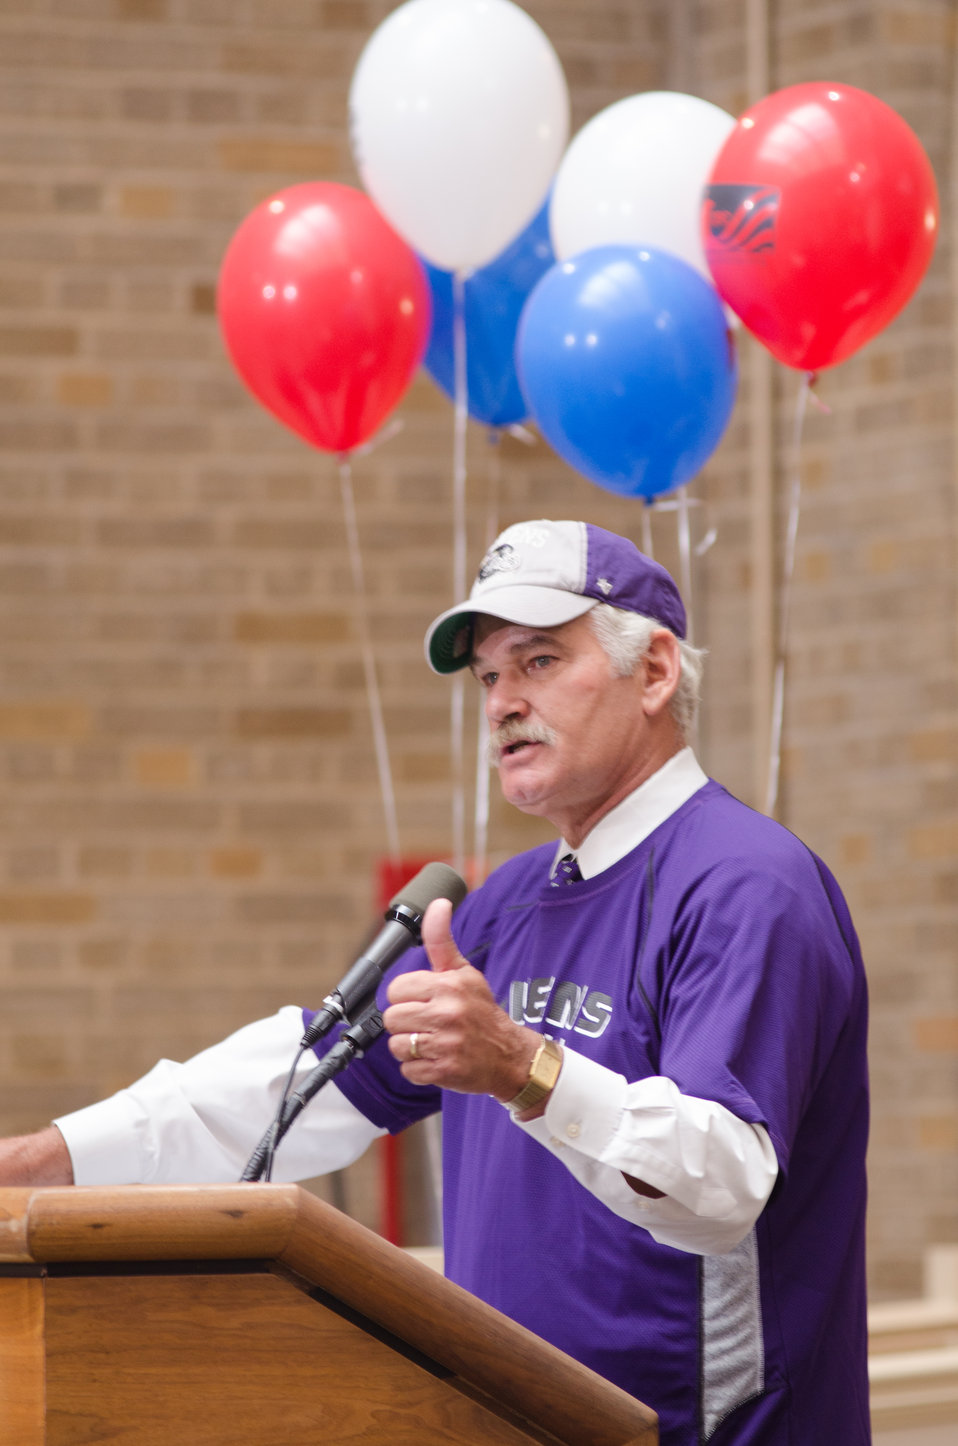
U.S. Department of Agriculture (USDA) Farm and Foreign Agricultural Services Under Secretary and Vice Chair of the USDA CFC Campaign Michael T. Scuse makes opening remarks the 2013 Combined Federal Campaign Opening Ceremony and fund raising event on Tuesday, Sept 17, 2013 in the Whitten Building, U.S. Department of Agriculture (USDA), Washington, D.C. The Combined Federal Campaign (CFC) is the largest and most successful workplace charitable giving drive in the world. CFC is the only authorized charitable organization solicitation of Federal employees in their workplaces. CFC is structured to support and to promote philanthropy through a voluntary program that is cost-efficient and effective in providing all Federal employees the opportunity to impact the CFC charitable interest of their choosing. For more information about CFC, please see www.usda.gov/wps/portal/usda/usdahome?navid=USDA CFC USDA Photo by Lance Cheung.